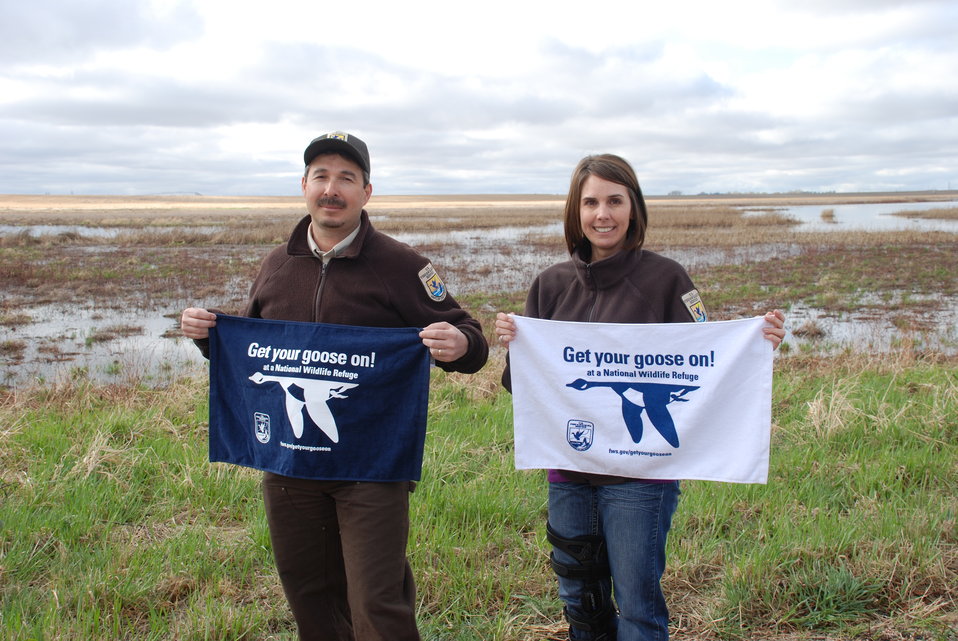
Get Your Goose On! at the Rainwater Basin Wetland Management District